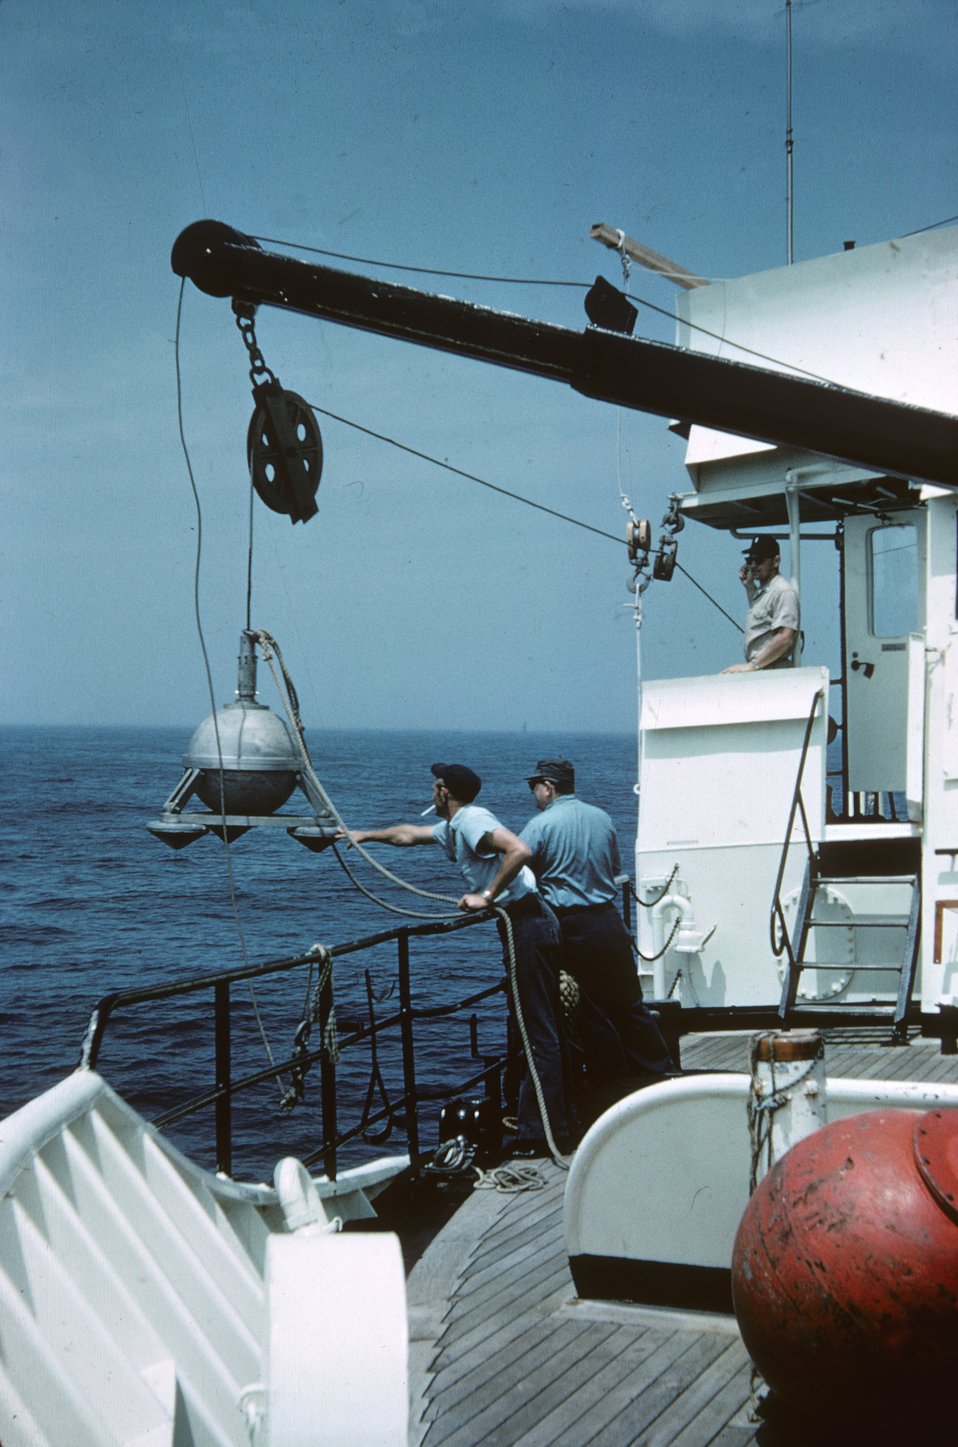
Deploying a bottom-mounted gravity meter.